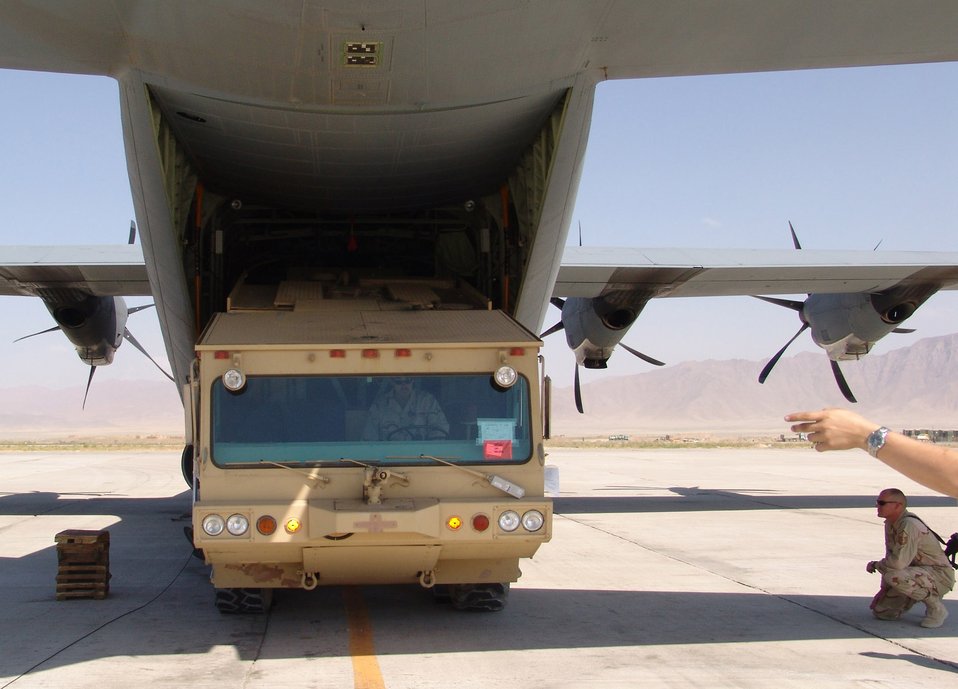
Firefighters

CHAGCHARAN, Afghanistan (AFPN) -- Senior Airman Victor Cardenas drives a fire truck off a C-130 Hercules at an air field in Chaghcharan in central Afghanistan. The six-man rapid-reaction fire rescue team is the only one of its kind in Afghanistan. It provides airfield rescue and fire-fighting capability to the air field. They provided fire protection for the Lithuanian Provincial Reconstruction Team. Airman Cardenas deployed from Ramstein Air Base, Germany.